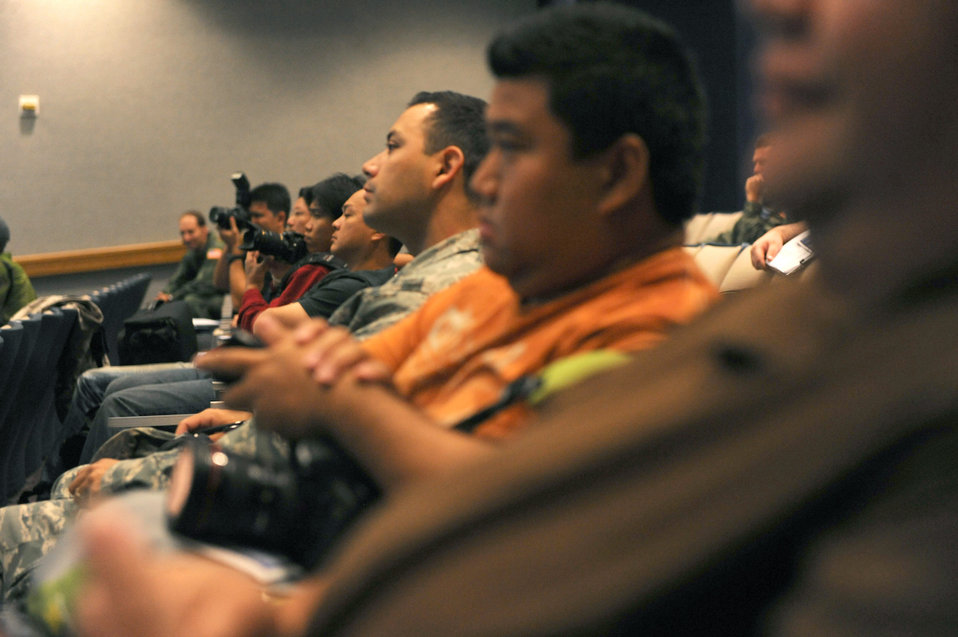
RIMPAC bloggers visit

Bloggers listen to a briefing July 16, 2010, at the 535th Airlift Squadron at Joint Base Pearl Harbor-Hickam Hawaii. Pacific Air Forces and the 535th AS officials, invited local bloggers to view an air drop first hand during the Rim of the Pacific Exercise. RIMPAC is the largest maritime exercise in the world and comprises participants from 14 nations, 32 ships, five submarines, more than 170 aircraft and 20,000 personnel.